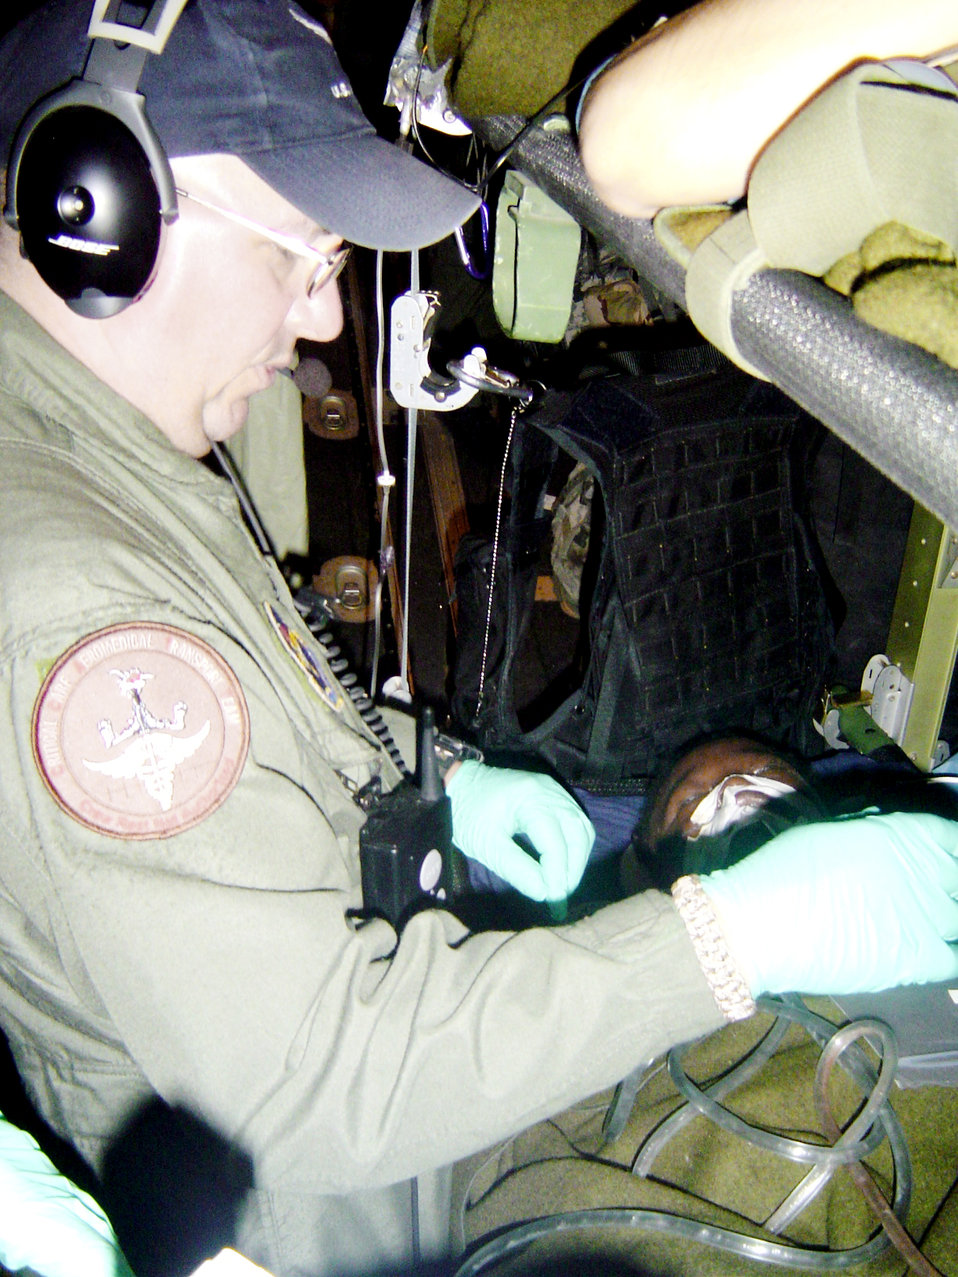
Keesler medical teams aid Haiti relief efforts

Tech. Sgt. Rich Pakula monitors equipment aboard a C-130 Hercules Feb. 7, 2010. Sergeant Pakula is an 81st Medical Group respiratory therapist from Keesler Air Force Base, Miss. Stephen Boskovich)